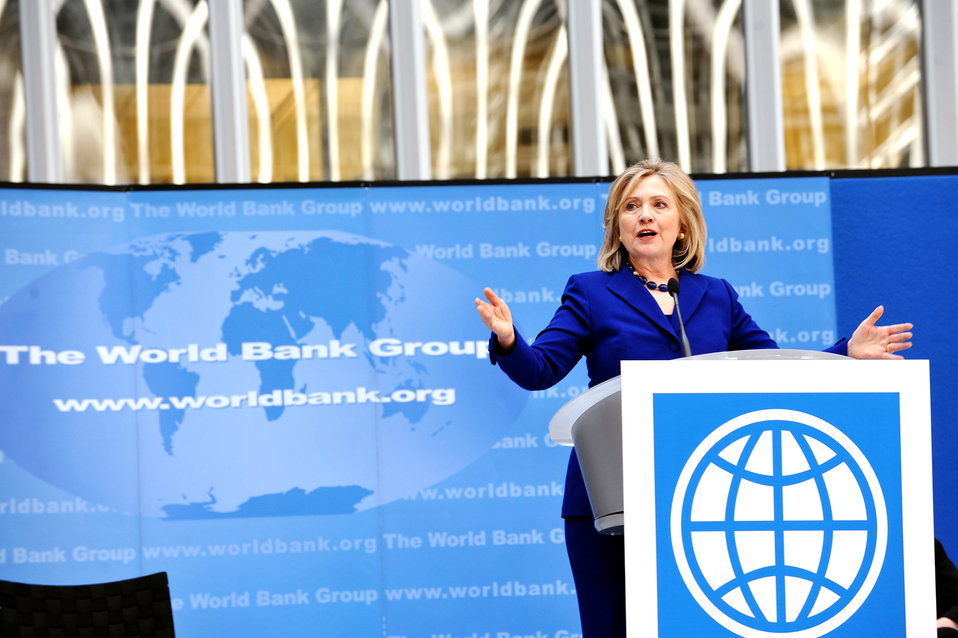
Secretary Clinton Delivers Remarks on World Water Day

U.S. Secretary of State Hillary Rodham Clinton delivers remarks on World Water Day in the World Bank Atrium in Washington, D.C., on March 22, 2011.